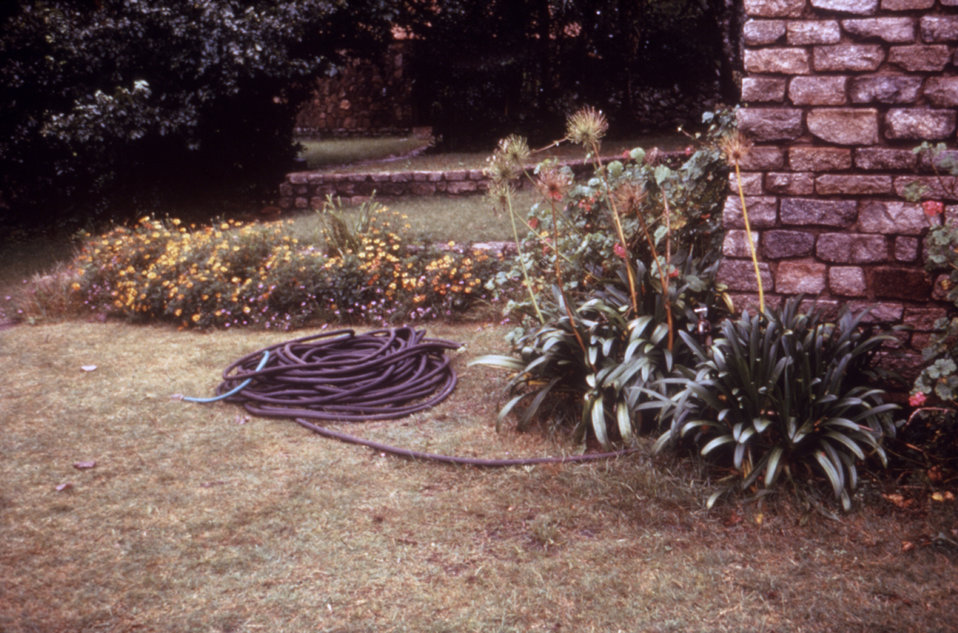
This photo of a garden in Zimbabwe was one of the South African sites where two Marburg patients visited in 1975.